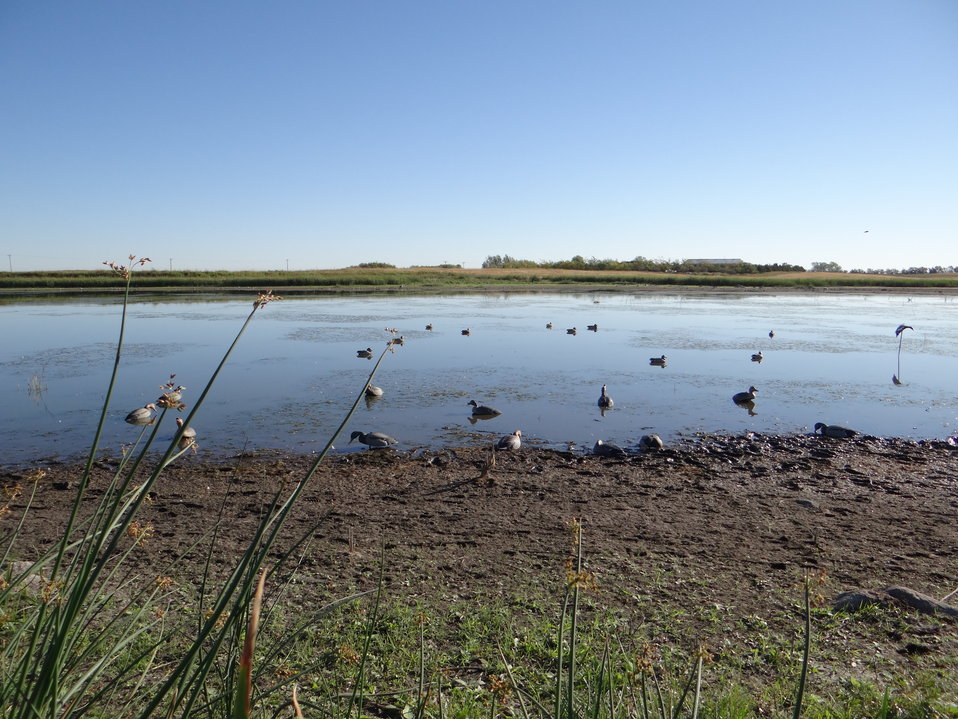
Decoy Spread During Hunt

2013 HURON WMD YOUTH WATERFOWL HUNT. Participants are first instructed how to set up a decoy spread in classroom setting on day one. Day two is setting up decoys in the field. The Huron Wetland Management District hosted its 10th annual Youth Waterfowl Hunt in September. This event provided 28 youth hunters between the ages of 12 – 15 and (new) mentored hunters (10-11), an opportunity to learn about various migratory birds and their habitats, duck and goose calling, decoys, and waterfowl hunting techniques. This event continues to be a success each year due to the dedicated volunteers within the community of Huron.